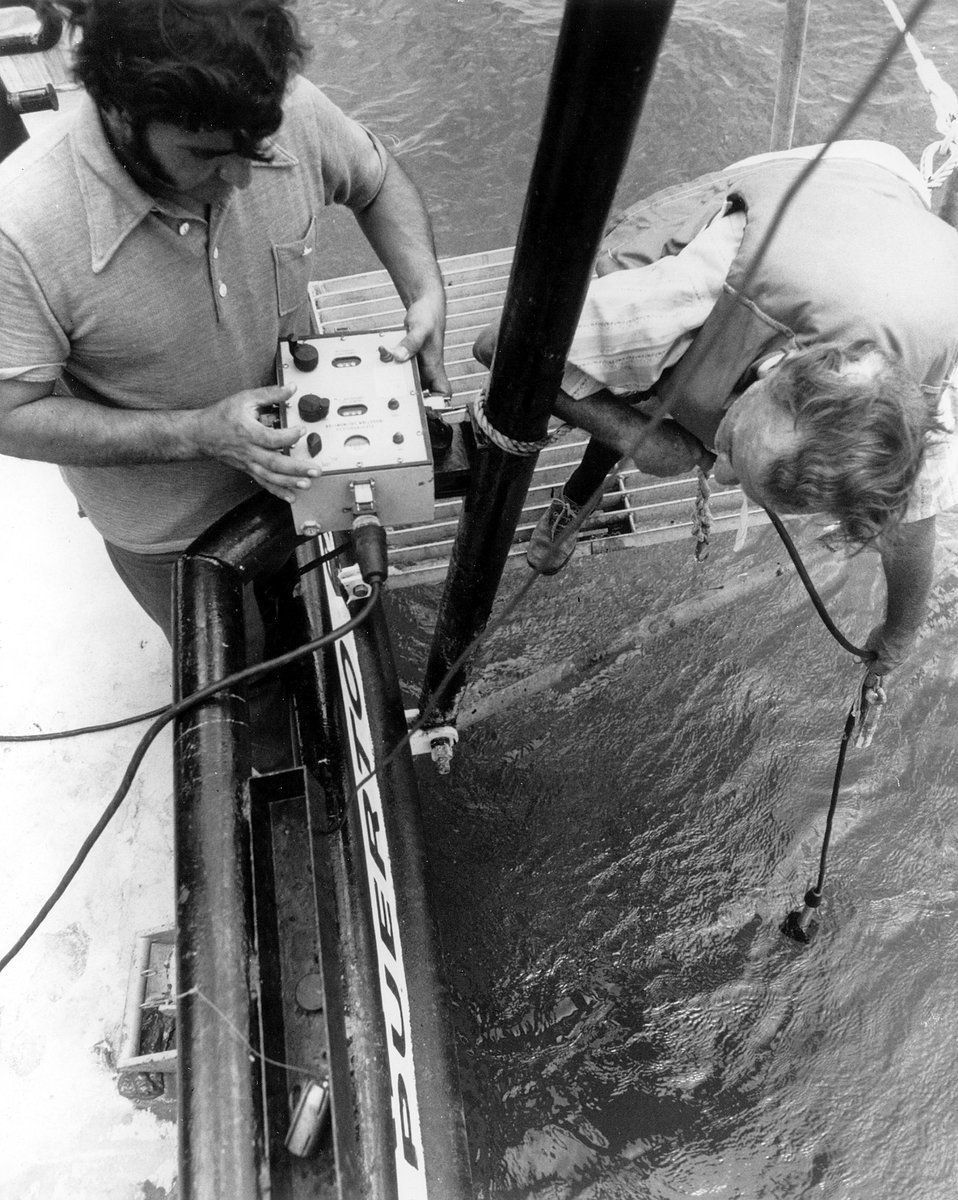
Study of Radionuclides in Marine Systems... Salinity of sea water is taken using equipment aboard the U.S. Atomic Energy Commission's research vessel, R.F. Palumbo. Circa 1972.